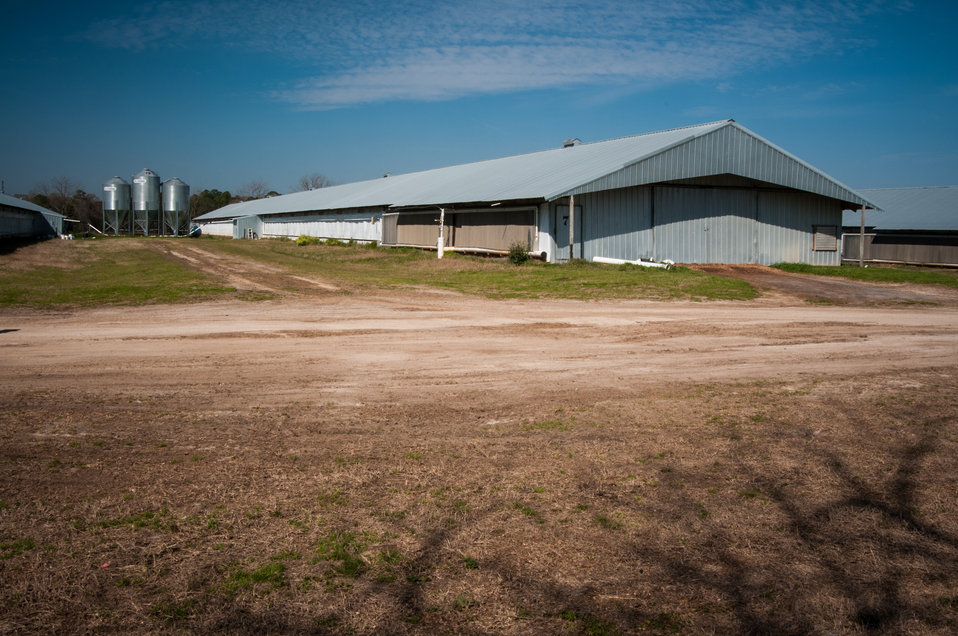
AKC Poultry houses bask in the sun in Arlington, GA on Mar. 7, 2013. AKC has eight chicken houses with approximately 20,000 birds per house. That is 160,000 birds, which translates into tons of litter. AKC was able to address their nutrient management and water quality concerns with a Stackhouse to better manage poultry litter through a U.S. Department of Agriculture (USDA) Natural Resources Conservation Service (NRCS) Environmental Quality Incentives Program (EQIP) contact. Stackhouses get the poultry litter off the ground so it will not contaminate water. The USDA Strike Force Initiative has designated Baker County, GA as a Strike Force county selected to receive assistance to relieve persistent poverty in historically high-poverty counties.